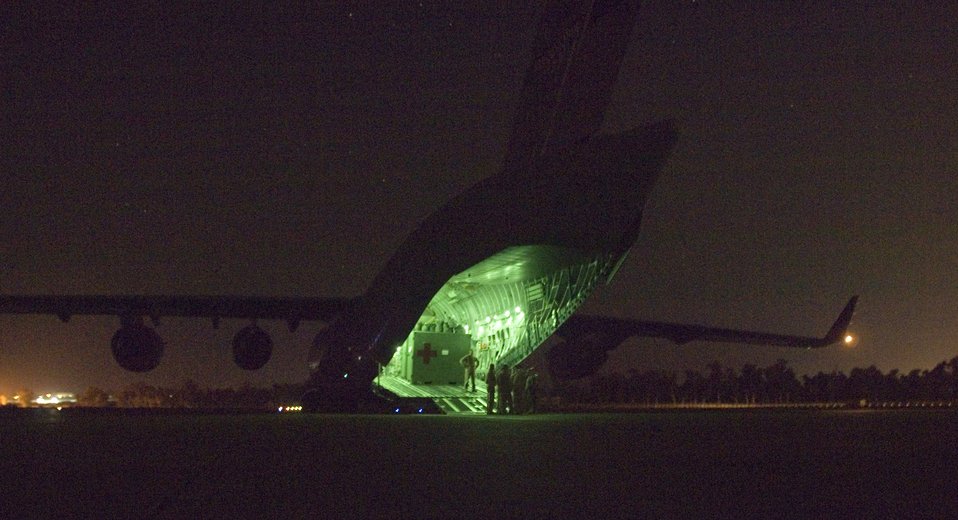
Air care

MOSEL, Iraq (AFPN) -- A C-17 Globemaster III sits on a flightline here. The C-17 was flown here by an Air National Guard aircrew with the 183rd Airlift Squadron from Jackson, Miss.